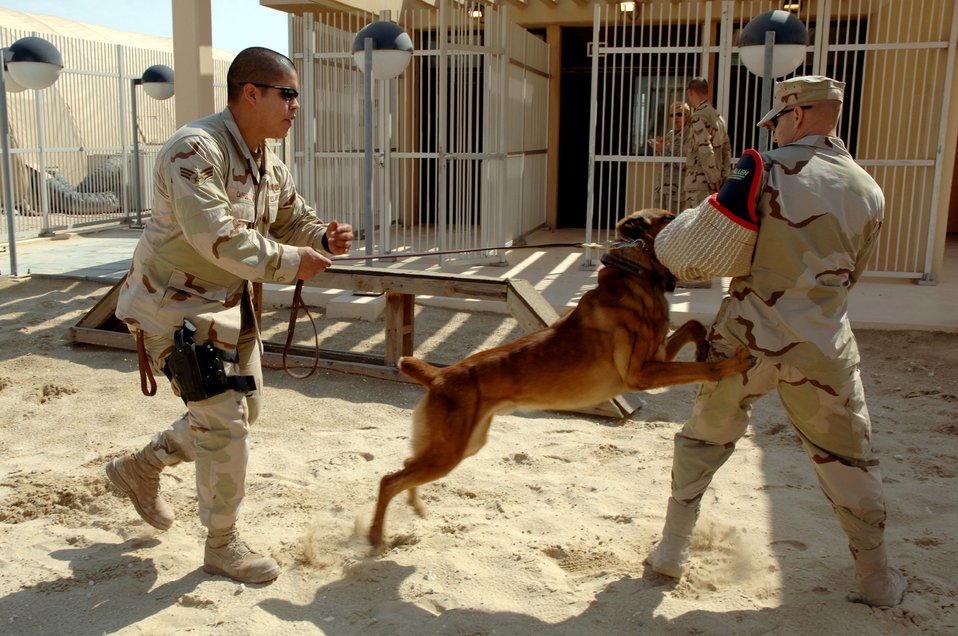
Partners in the desert

SOUTHWEST ASIA (AFPN) -- Senior Airman Martin Campos (left) conducts aggression training with his military working dog, Rico, and Tech. Sgt. Max Talley at a deployed location Feb. 24. Both Airmen and Rico are with the 379th Expeditionary Security Forces Squadron.